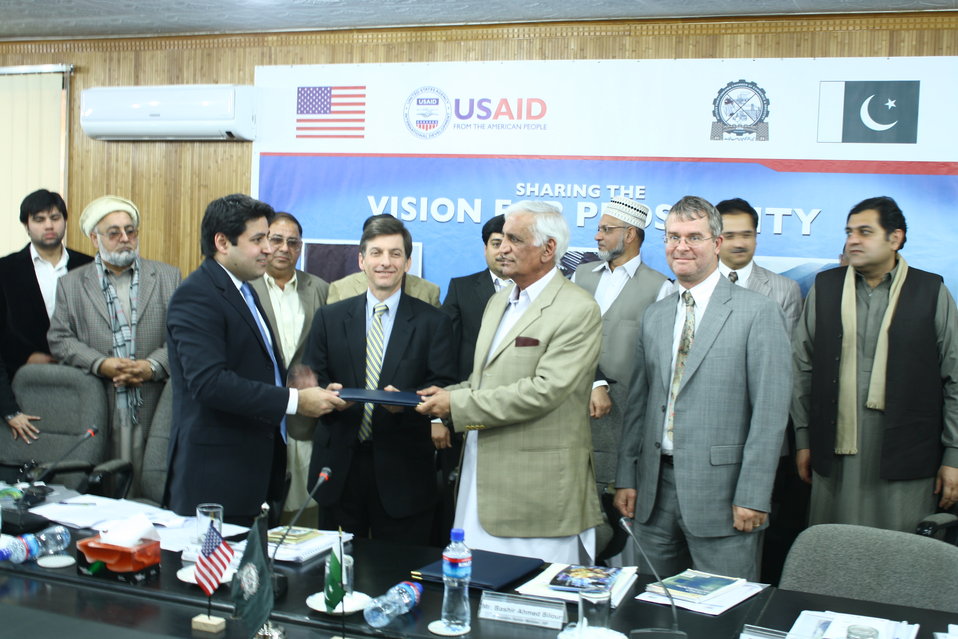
USAID Joins Hands with KPPCI to Develop a Roadmap to Promote Tourism and Industry in KPK - 2

USAID Mission Director Dr. Andrew B. Sisson and KPCCI President Afan Aziz formally handover the vision documents to Bashir Ahmed Bilour, Senior Minister, Government of KPK, on behalf of USAID and KPCCI.